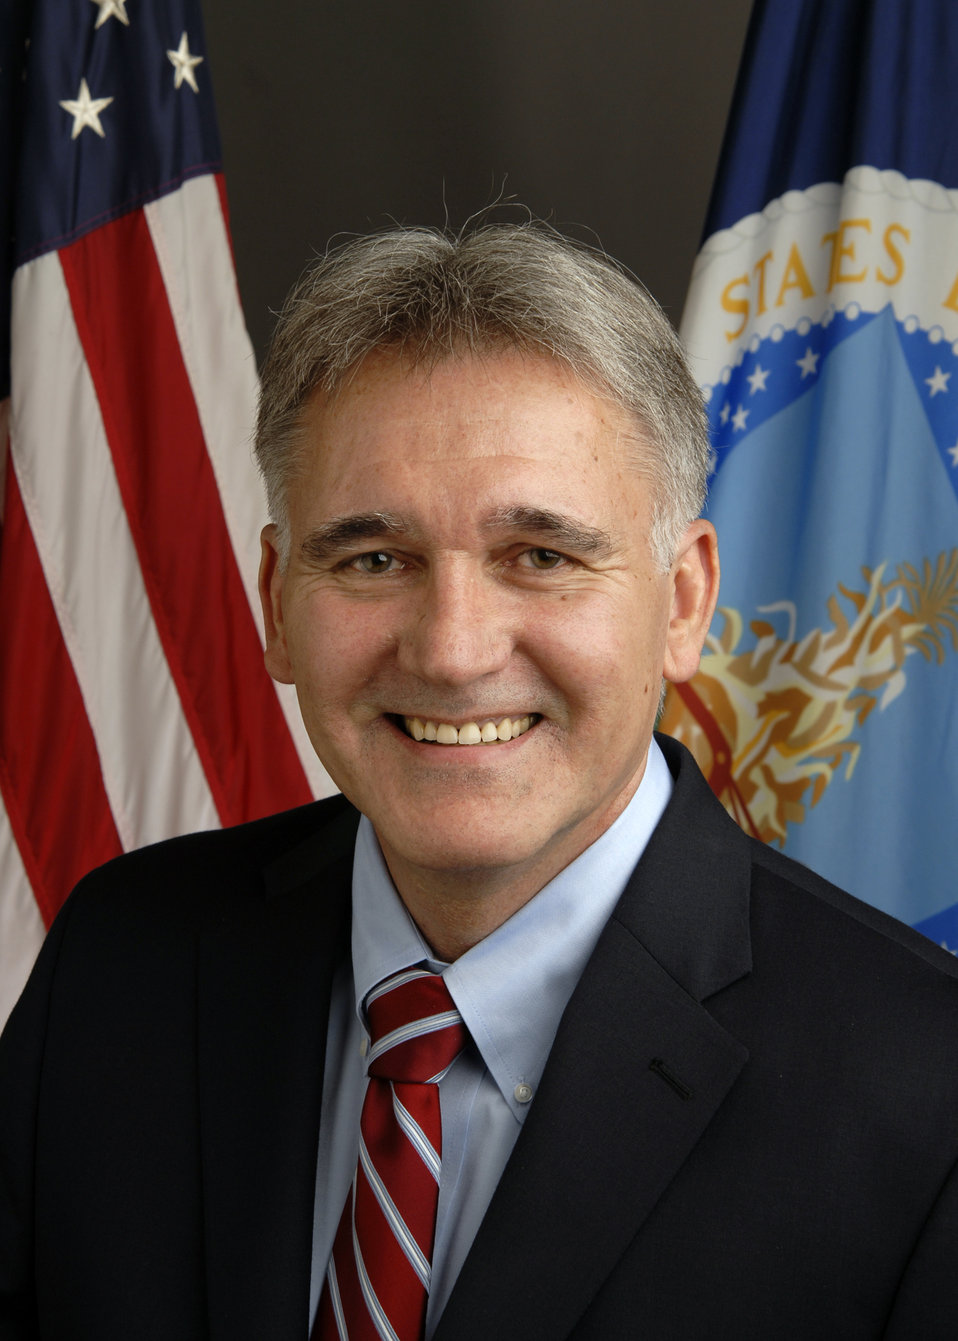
20120801-RMA-KJH-2814 Administrator, Risk Management Agency William J. Murphy

Official portrait of William J. Murphy, AAdministrator, Risk Management Agency.